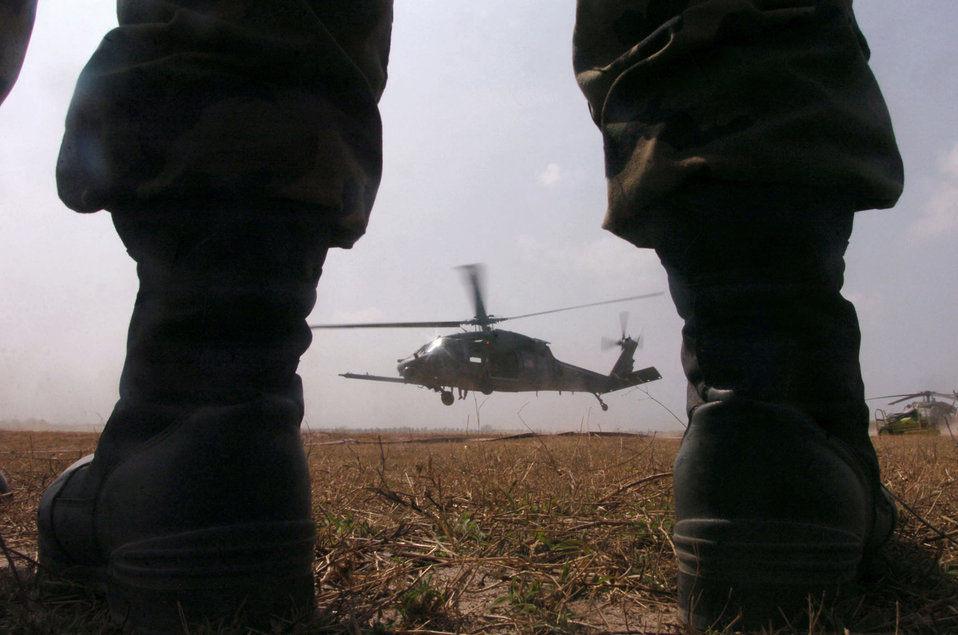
Boots on the ground

OPERATION UNIFIED ASSISTANCE -- An HH-60 Pave Hawk helicopter takes off on a relief mission. The helicopters helped deliver food, medicine and supplies to people affected by the Dec. 26 tsunamis that devastated the region.